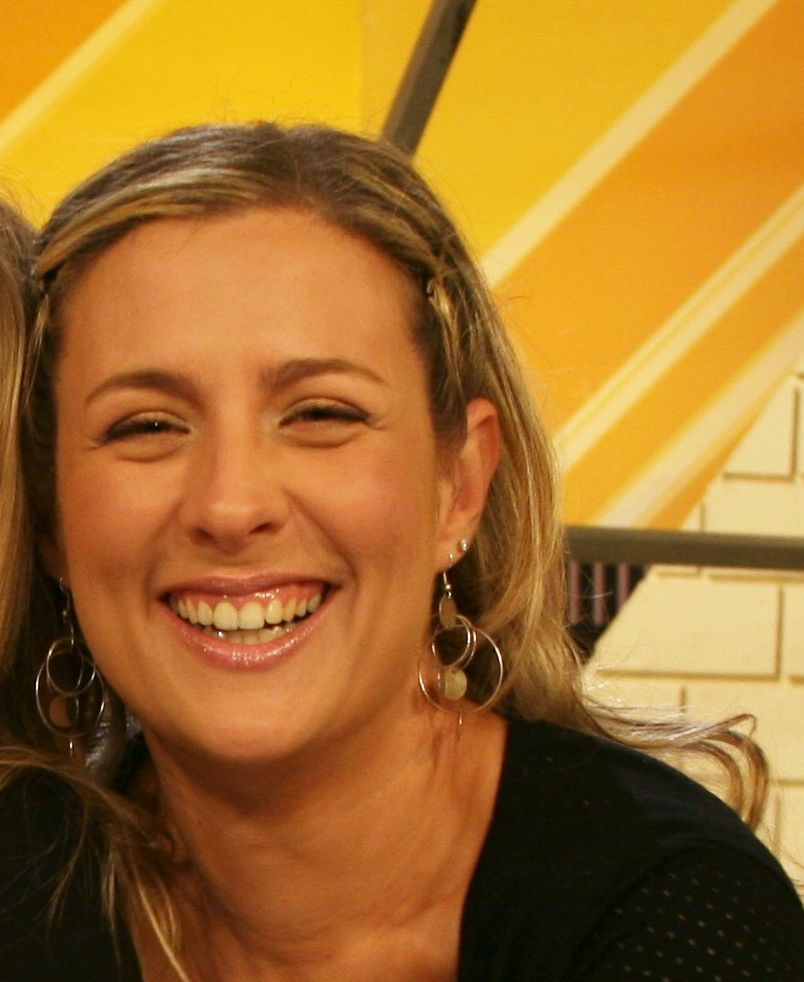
Daphna Shpigelman on the set of 'HaBoker HaShvihi' (Television magazine)